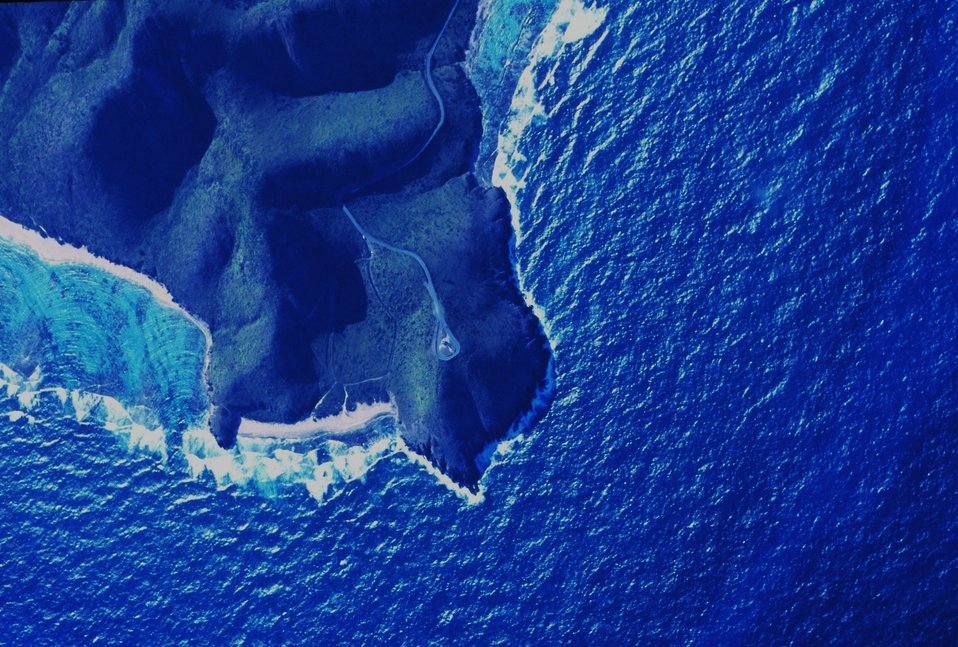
Point Udall, the easternmost point of U. S. territory in the Western Hemisphere. Note wave refraction patterns in the shallow water to the left of the point.